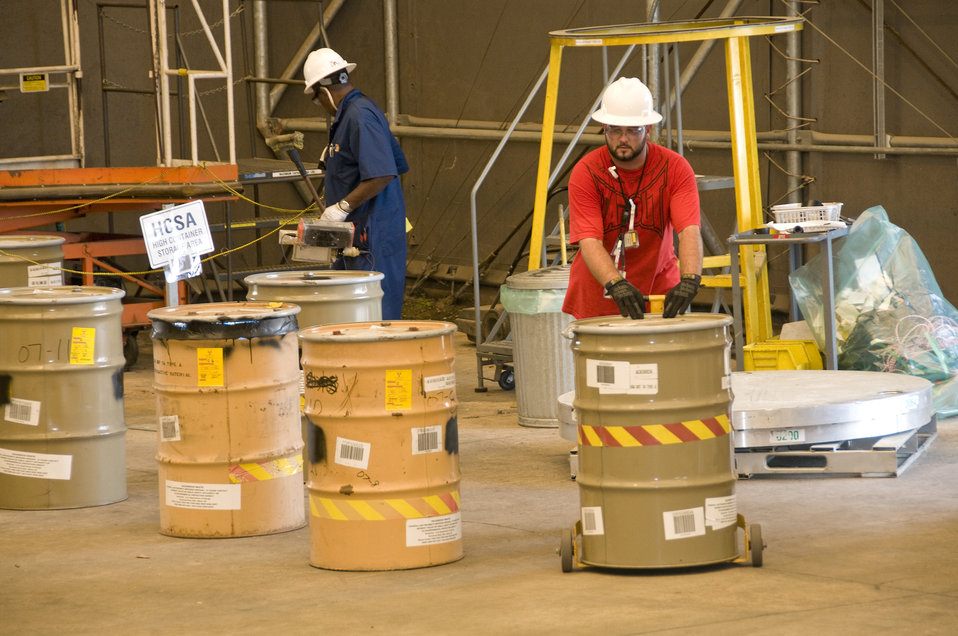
SRS Waste Shipment

Recovery Act workers prepare legacy transuranic waste for shipment to DOE’s Waste Isolation Pilot Plant in New Mexico for safe, permanent disposal.